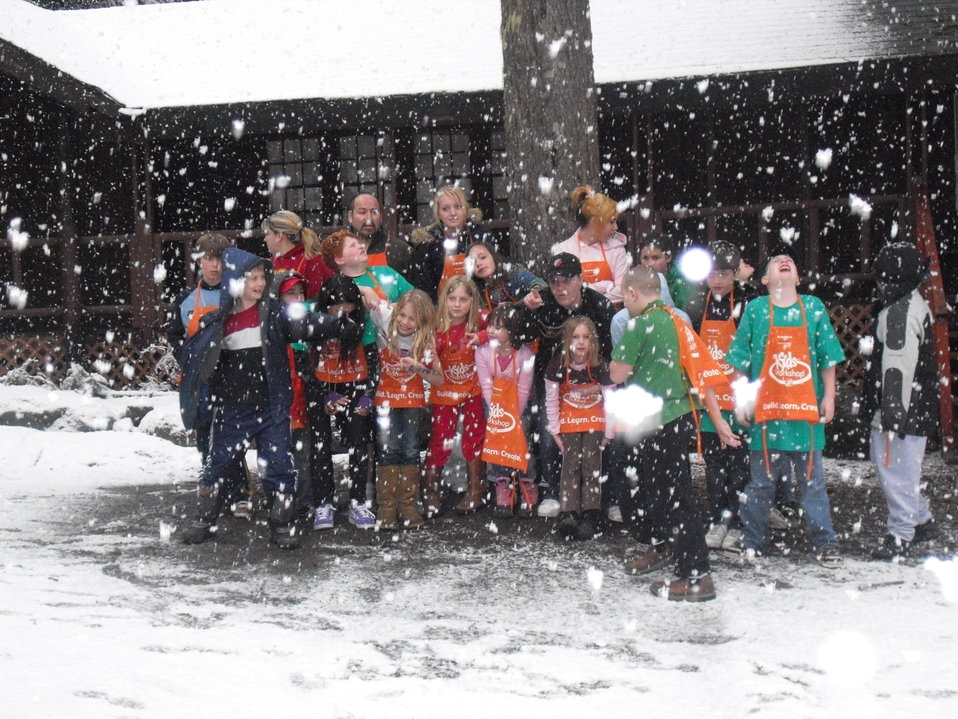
2010 Wilderness Camp

Campers participating in the Spring Break Wilderness Camp finished their Home Depot activity building planters, and showed their thanks to our partners by going outside.